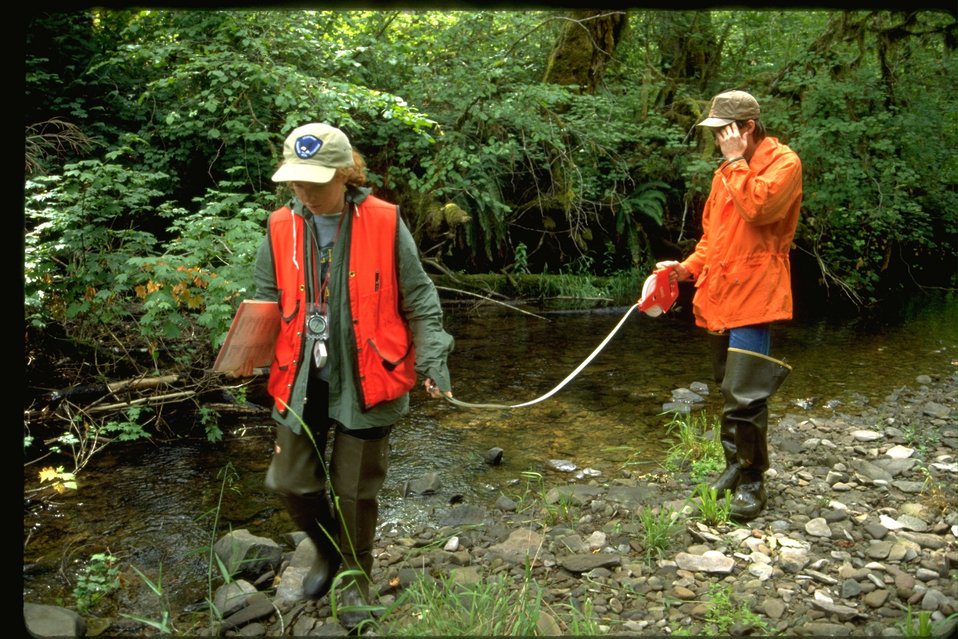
Sarah and Russ surveying Smith Creek during habitat study.